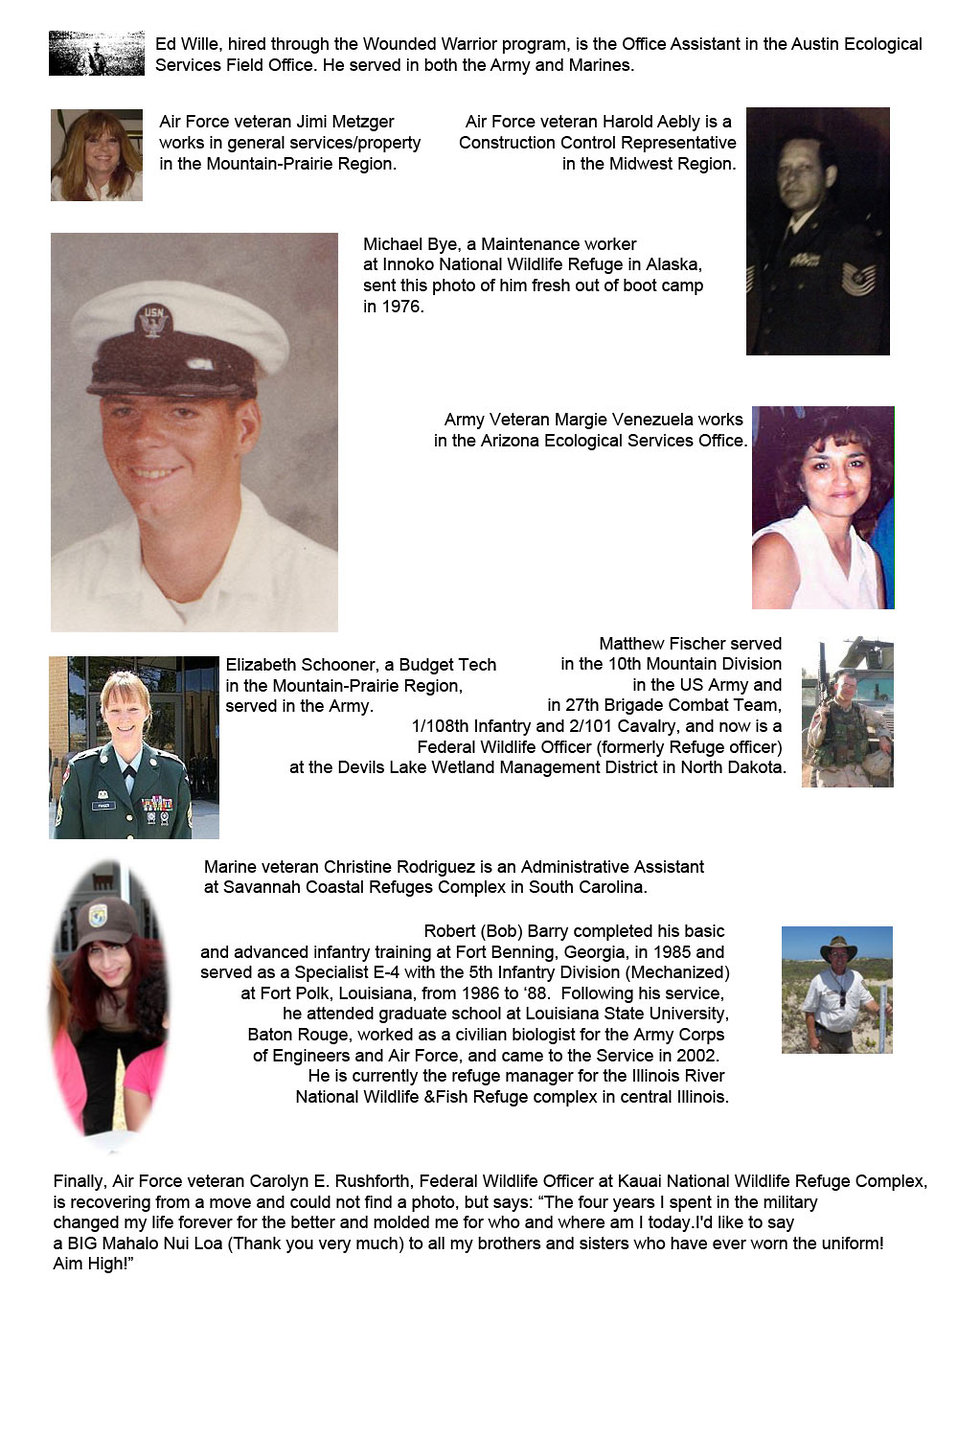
More Veterans